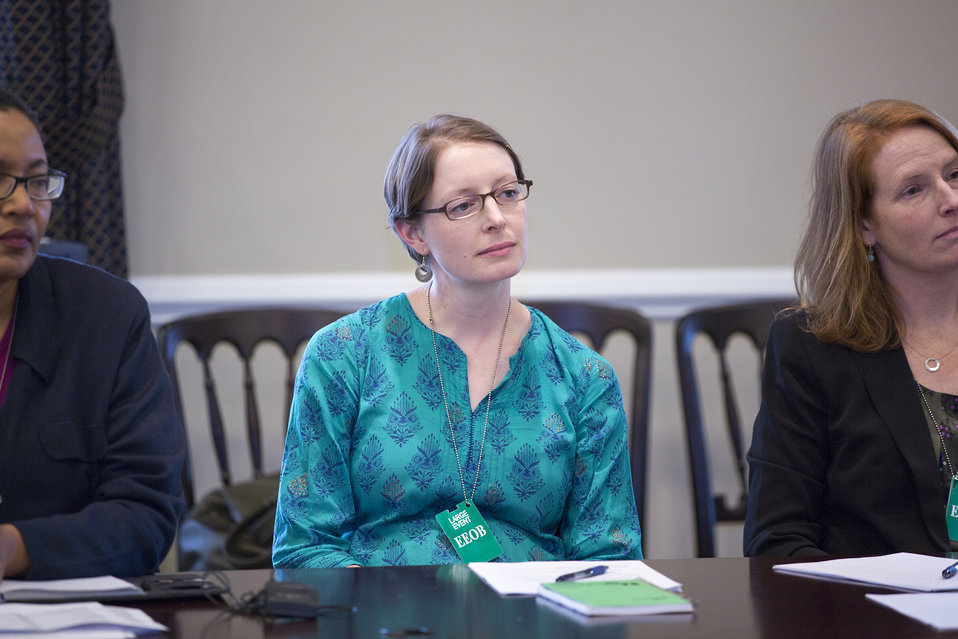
U.S. Department of Agriculture's (USDA) National Coordinator for Local and Regional Food Systems Elanor Starmer and Maine Sustainable Agriculture Programs at CEI, a Community Development Financial Institution Director Gray Harris participate in White House Rural Council discussion on strategies to use local food to increase healthy food access and stimulate to local economies on Tuesday, Feb. 4, 2014 at the White House in Washington, DC.